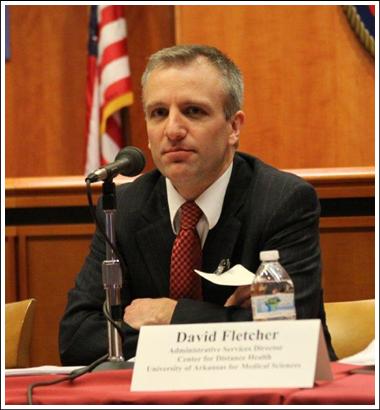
David Fletcher

Panel 3: Discussion of Best Practices Learned from Implementing Broadband Adoption Programs Within Different Communities